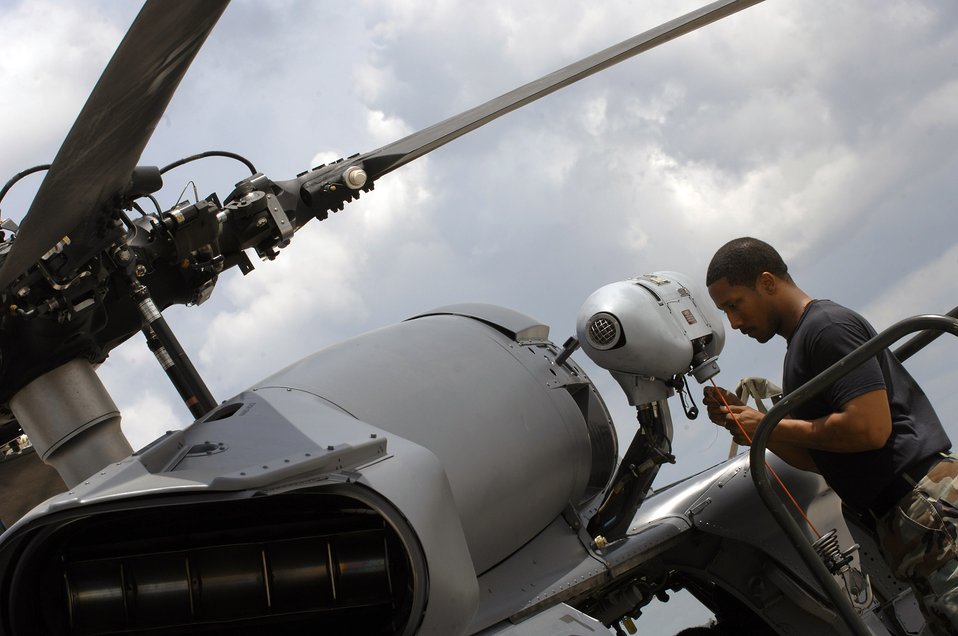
Prepared for any emergency

Staff Sgt. Ray Campbell installs a hoist cable squib April 1 on an HH-60G Pave Hawk helicopter at Moody Air Force Base, Ga. A hoist cable squib is an explosive device that cuts through the cable in an emergency. Sergeant Campbell is with the 723rd Aircraft Maintenance Squadron.